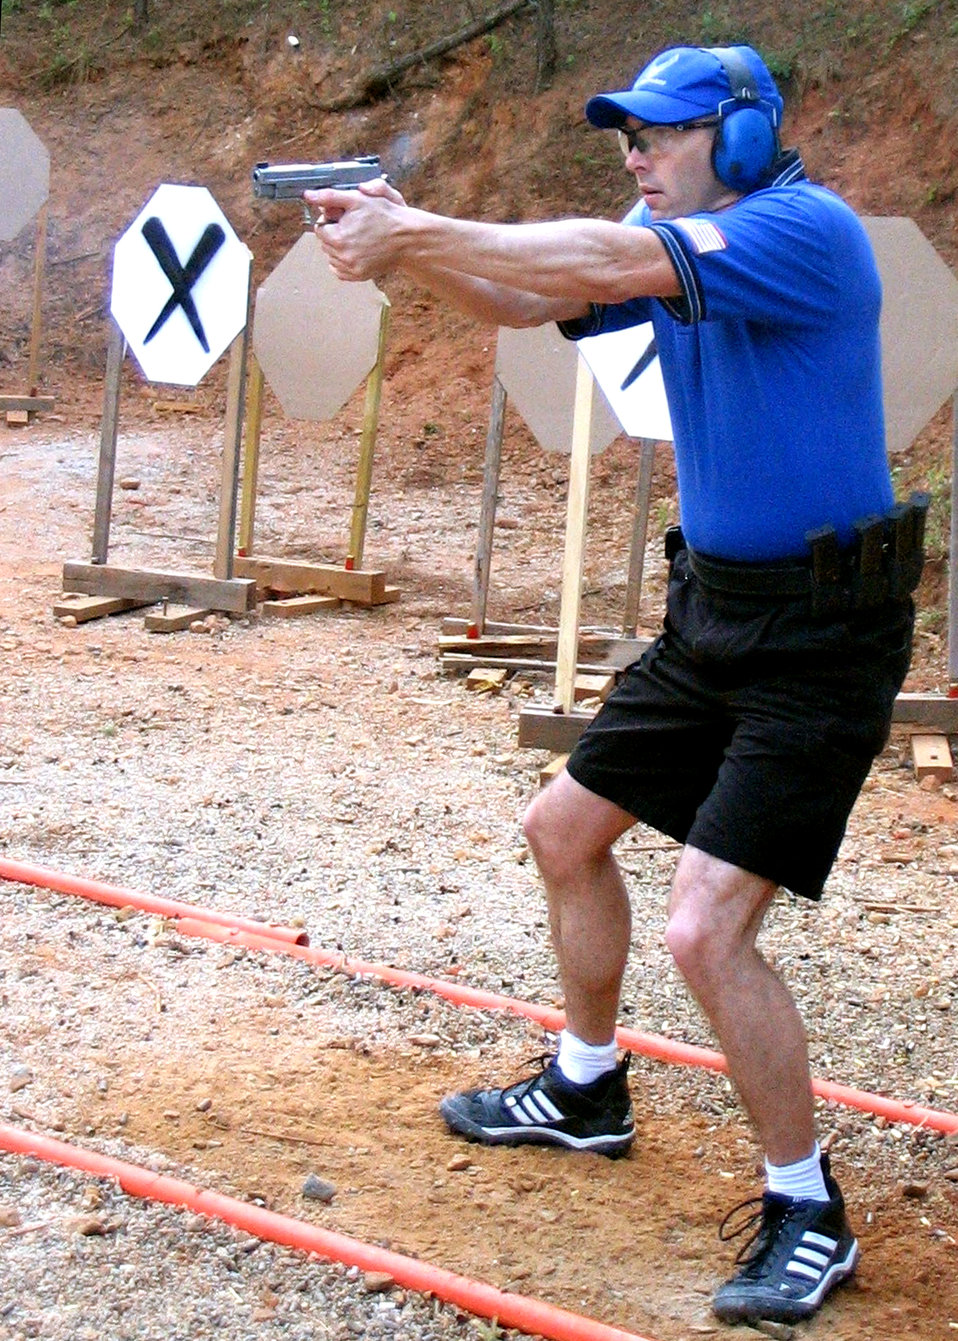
STRATCOM Airman on target for world title

ATLANTA -- Maj. Roger Sherman lines up his shot during a practical shooting competition here. Practical shooting measures a person's ability to shoot rapidly and accurately with a full power handgun, rifle or shotgun. Major Sherman is one of four people on the U.S. National Production Team who will be competing at the International Practical Shooters Confederation World Shoot XIV in August.